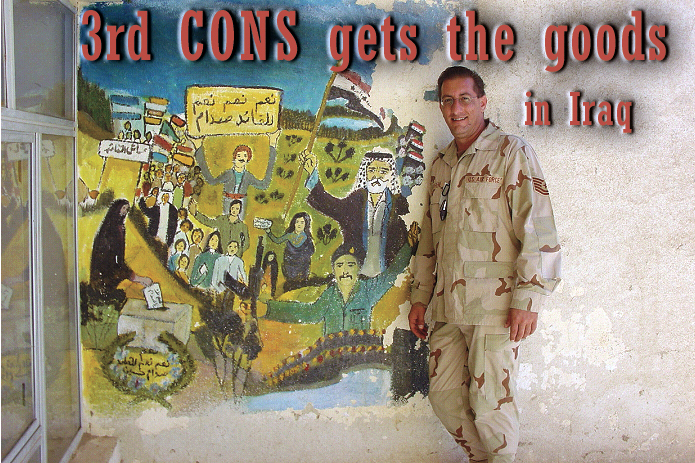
Contractors get

IRAQ -- Tech. Sgt. Jamie Dufrene stands in front of a mural in southern Iraq during his deployment to Tallil Air Base. Sergeant Dufrene's job was to purchase goods from Iraqi vendors to supply the base. He is assigned to the 3rd Contracting Squadron at Elmendorf Air Force Base, Alaska.